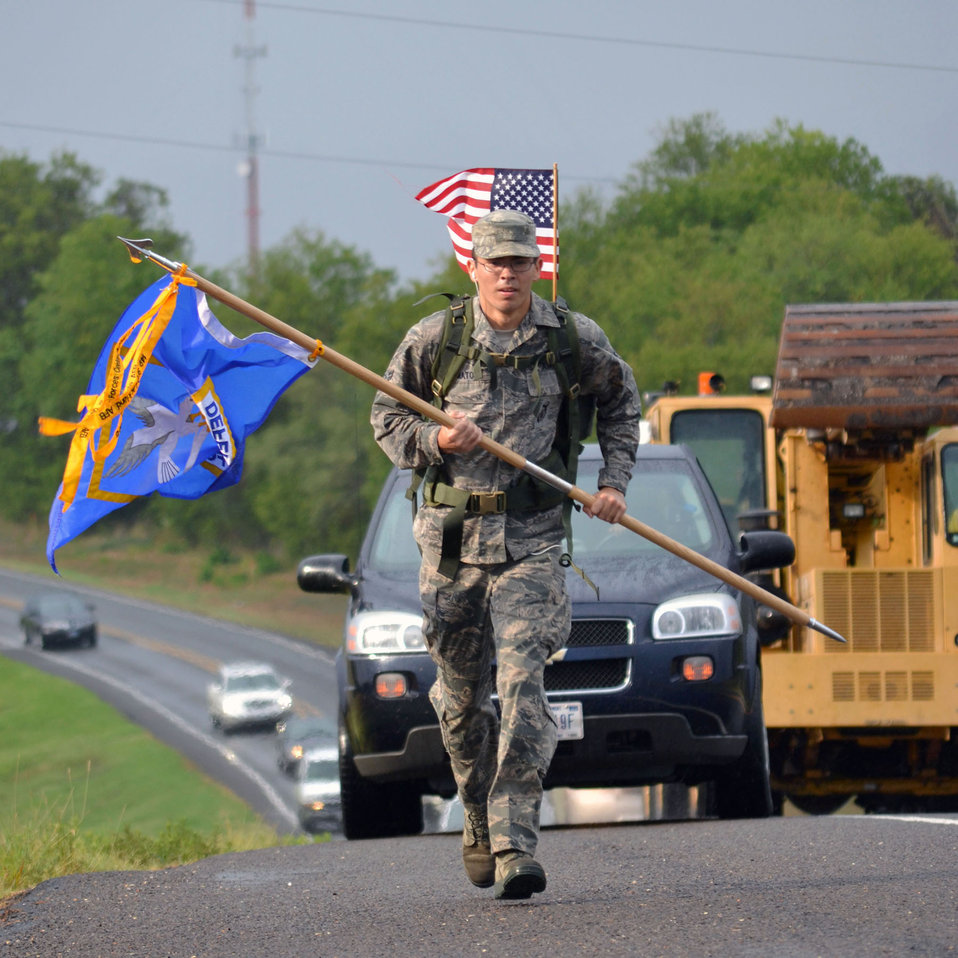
Marching for a cause

Airman 1st Class Micah Mato marches down a road July 18, 2011, in Texas as he completes his portion of the 2,181-mile Ruck March to Remember. Security Forces Airmen from 23 squadrons began the 2,181-mile march July 12 at Lackland Air Force Base, Texas, and will finish their journey Sept. 11 at Ground Zero in New York City. Mato is assigned to the 2nd Security Forces Squadron.